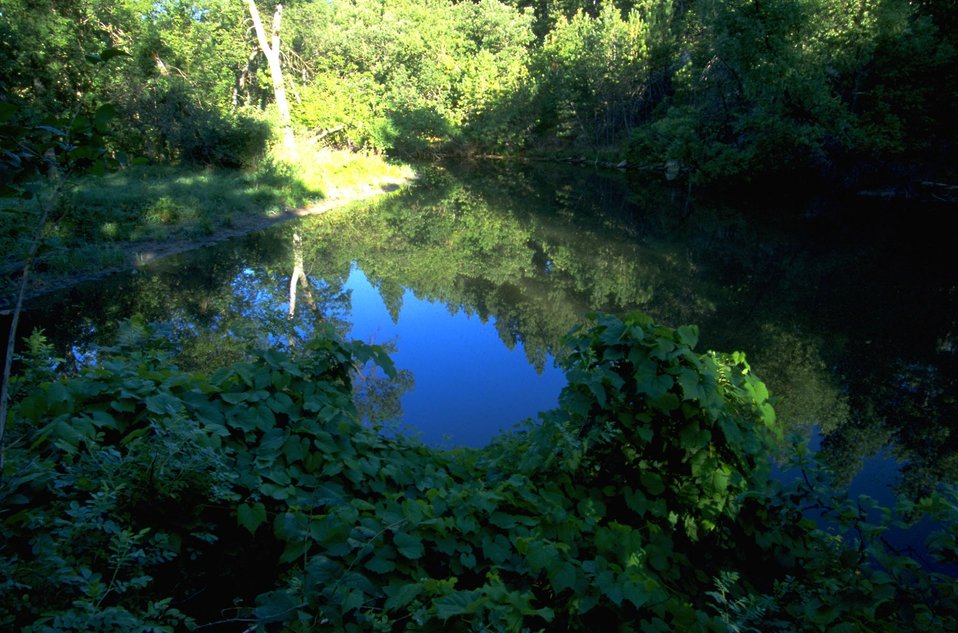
Frog Pond on Cattle Creek